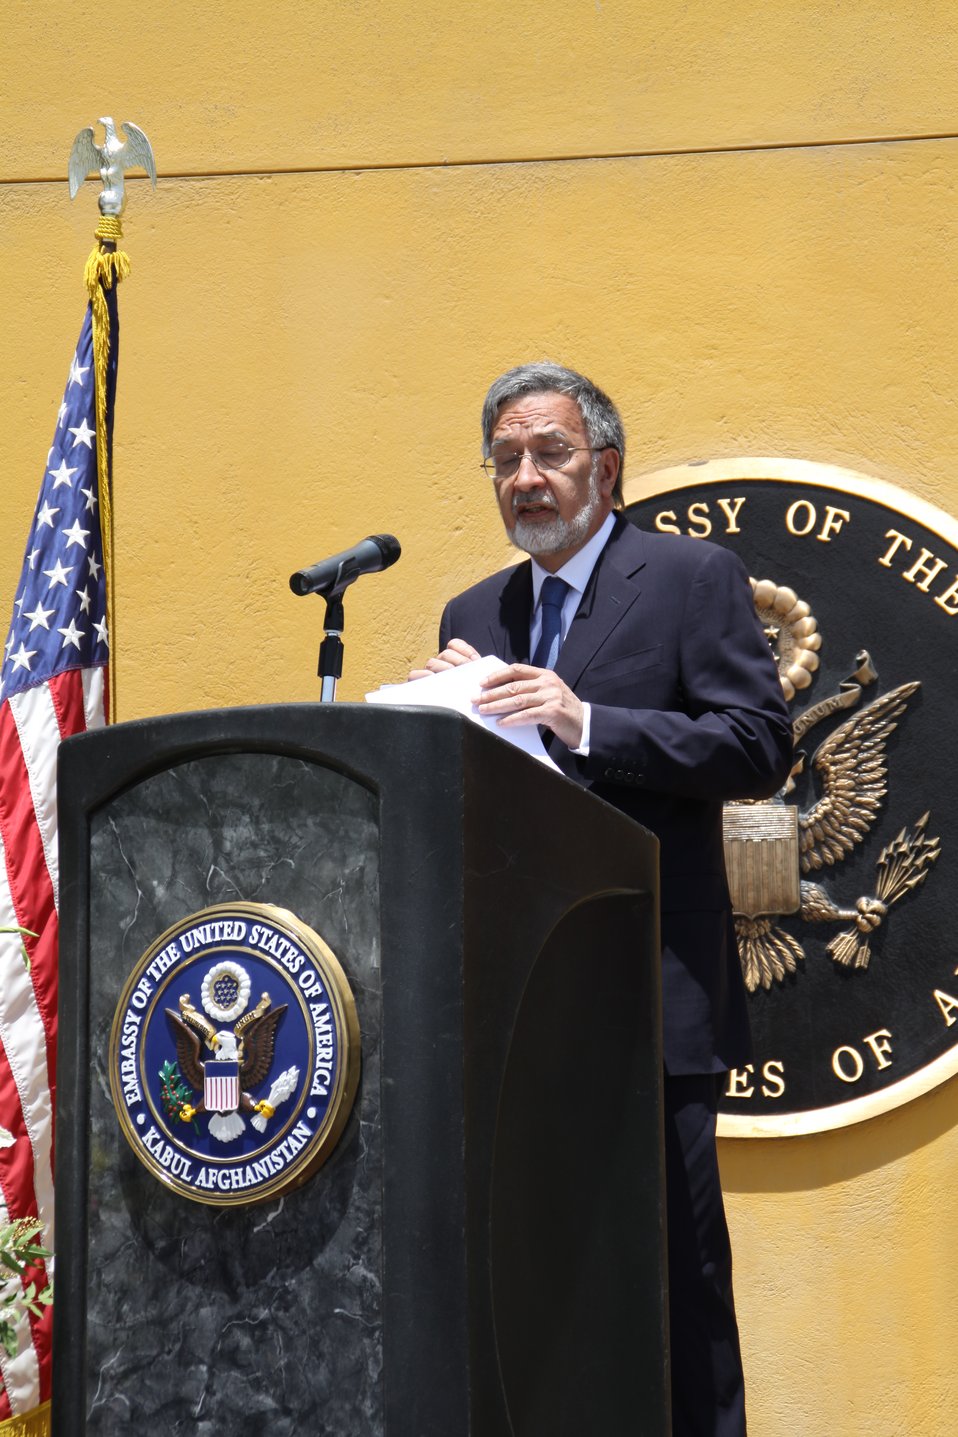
Kabul Official July 4th Celebration